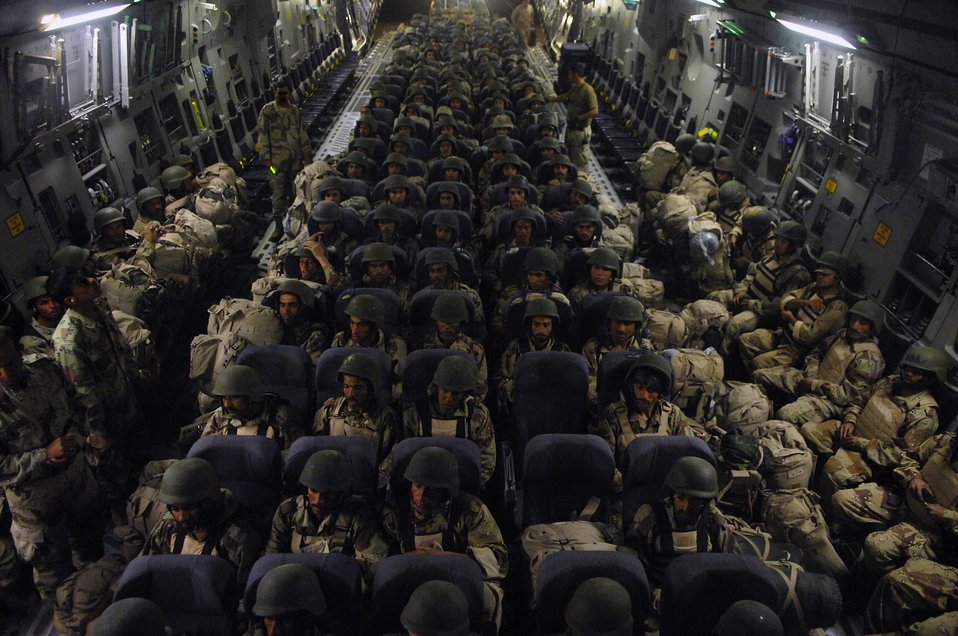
On our way

An Air Force C-17 Globemaster III transports members of the Iraqi army to Basra, Iraq, from New Al Muthana Air Base on April 2. The troops were supporting operations in the area.